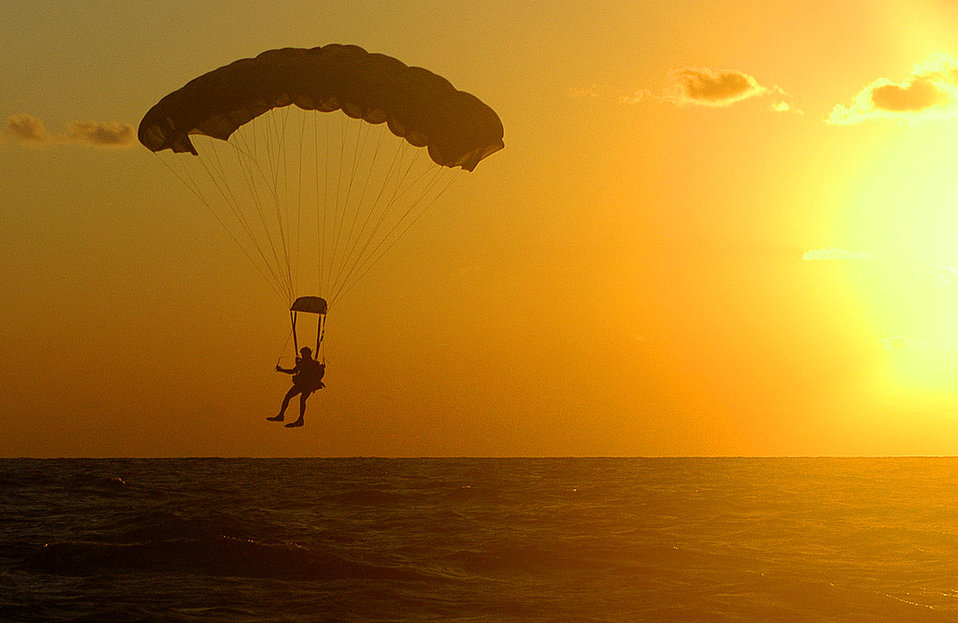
Ready for splashdown

A pararescueman from the 320th Special Tactics Squadron at Kadena Air Base, Japan, prepares to land in the Pacific Ocean Dec. 2 after jumping from an MC-130H Combat Talon II. The pararescueman was one of seven who parachuted into the water to